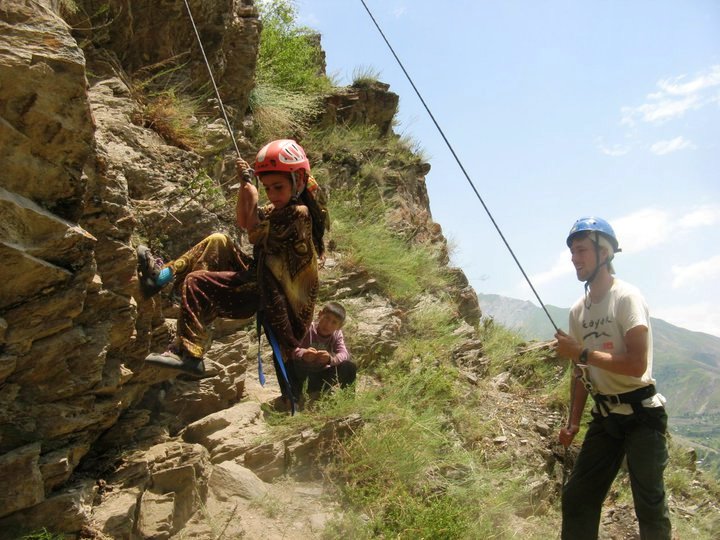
Tajik youth rock climb with the help of a camp counselor at Camp America, a U.S. Embassy Dushanbe-supported summer camp, in Hoyt, Tajikistan, in July 2010.